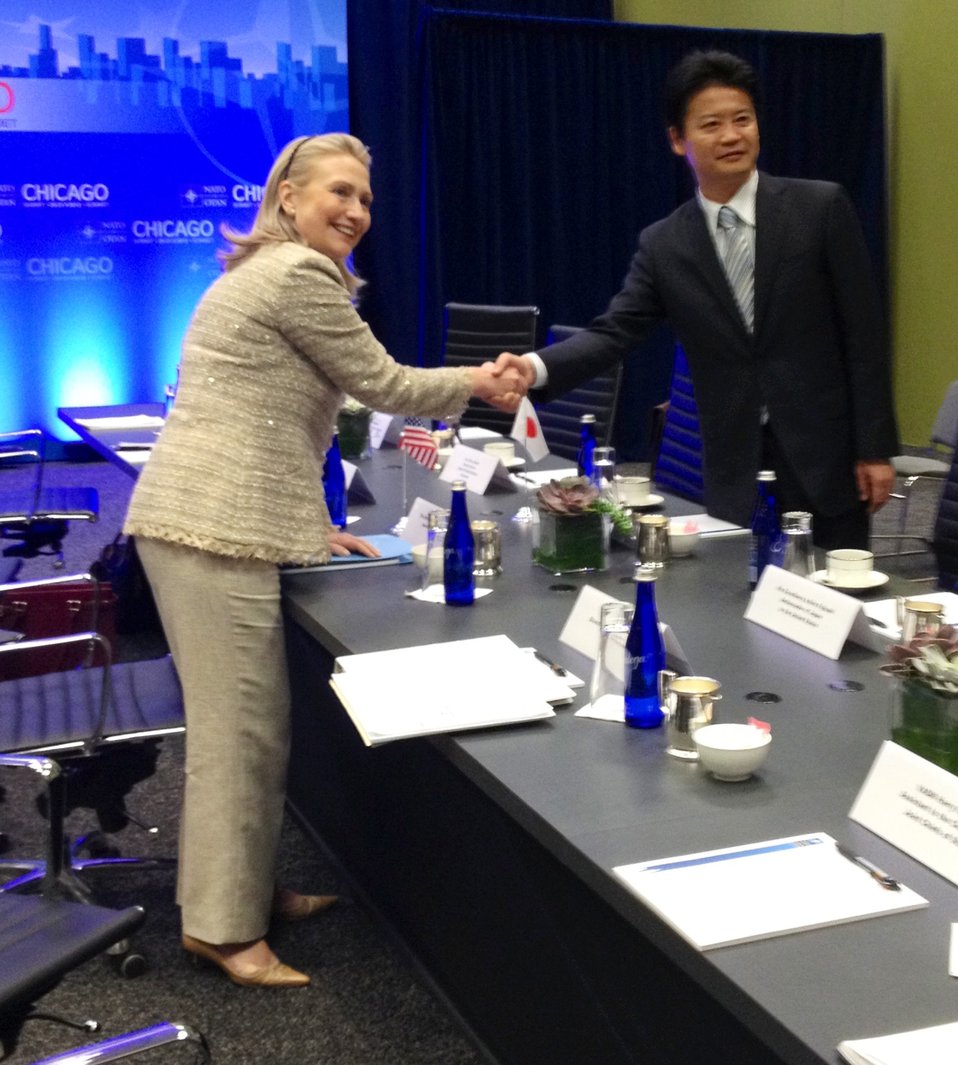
Secretary Clinton Meets With Japanese Foreign Minister Gemba

U.S. Secretary of State Hillary Rodham Clinton meets with Japanese Foreign Minister Koichiro Gemba meet on the margins of the NATO Summit in Chicago, Illinois, on May 21, 2012.